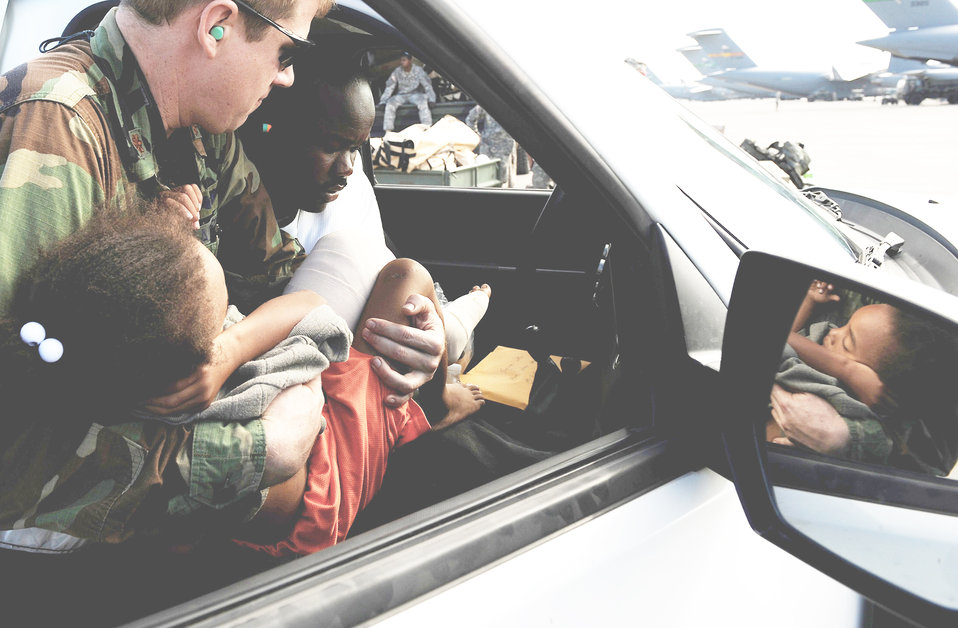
Hurlburt Field medics continue to save lives in Haiti

Maj. Timothy Ballard loads a 6-year-old Haitian boy into a vehicle for transport to a field clinic at Toussaint L'Ouverture International Airport Jan. 19, 2010, in Port-au-Prince, Haiti, prior to being airlifted to a stateside hospital in southern Florida. Department of Defense assets have been deployed to assist in the Haiti relief effort following a magnitude-7 earthquake that hit Port-au-Prince Jan. 12. Major Ballard is assigned to the 1st Special Operations Support Squadron from Hurlburt Field, Fla.